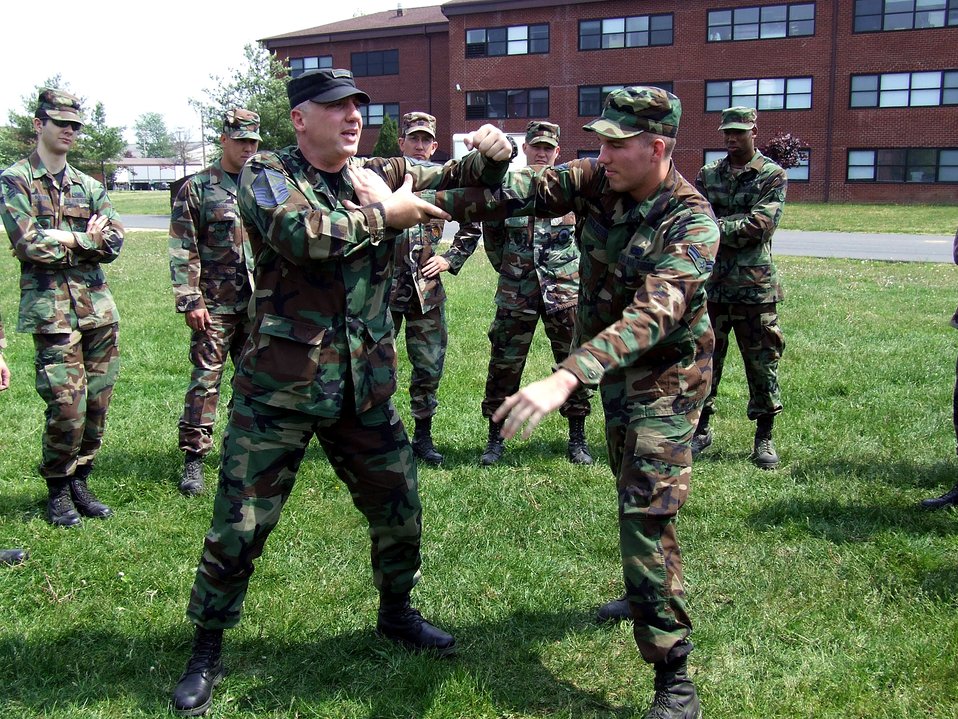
Self defense course kicks way into training

Master Sgt. Jack Smith teaches students in the Advanced Contingency Skills Training Course one of the moves in Linear Infighting Neural-override Engagement, or LINE, training during a class session May 16 at the U.S. Air Force Expeditionary Center on Fort Dix, N.J. LINE training is one of the newest training techniques offered at the center. Sergeant Smith is a 421st Combat Training Squadron instructor.